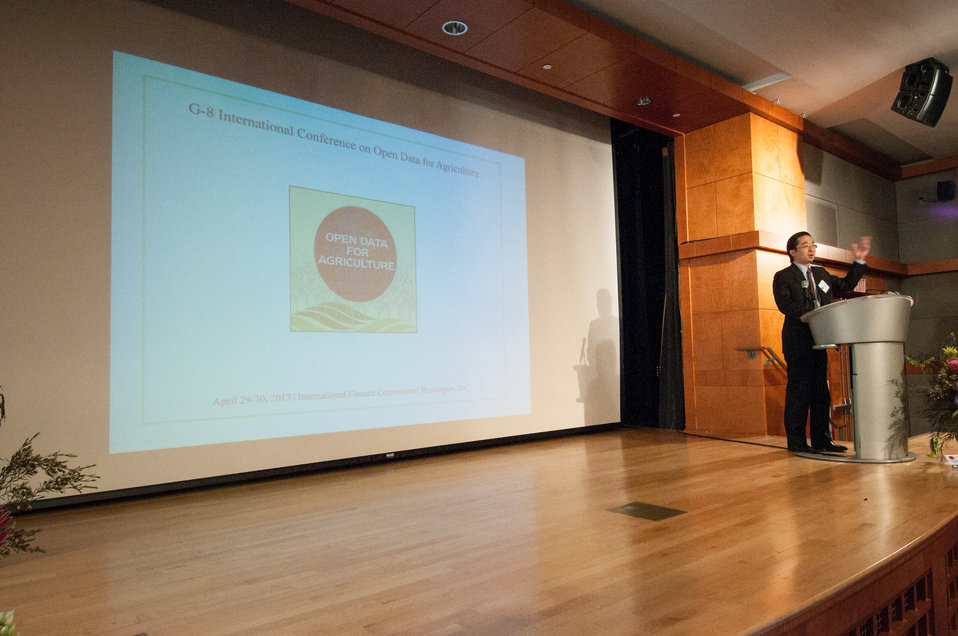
White House Chief Technology Officer Todd Park makes opening remarks at the G-8 International Conference on Open Data for Agriculture in Washington, D.C. on Apr. 29, 2013. Agriculture Secretary Tom Vilsack announced the launch of a new 'virtual community' as part of a suite of actions, including the release of new data, that the U.S. is taking to give farmers and ranchers, scientists, policy makers and other members of the public easy access to publicly funded data to help increase food security and nutrition.